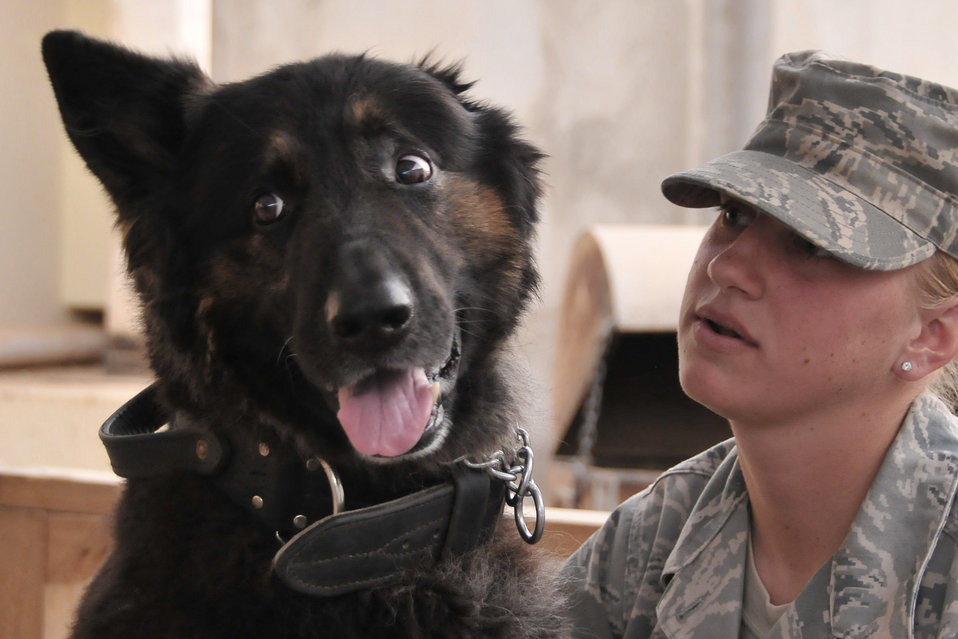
Airmen 'unleash' new recovery program for patients

Staff Sgt. Kristen Smith gives verbal positive reinforcement to her explosives-detection military working dog, Cezar, for his conduct during his participation in the K-9 Visitation Program at the Air Force Theater Hospital May 15 at Joint Base Balad, Iraq. The newly created program allows AFTH patients to interact with K-9s to help further their recovery after injury or illness as a form of animal-assisted therapy. The program also furthers the military working dogs' training, as they work in close proximity with coalition forces here during their day-to-day mission. Sergeant Smith is a 332nd Expeditionary Security Forces Group K-9 handler. She and her dog are deployed from McGuire Air Force Base, N.J. Sergeant Smith is a native of Johnstown, Pa.